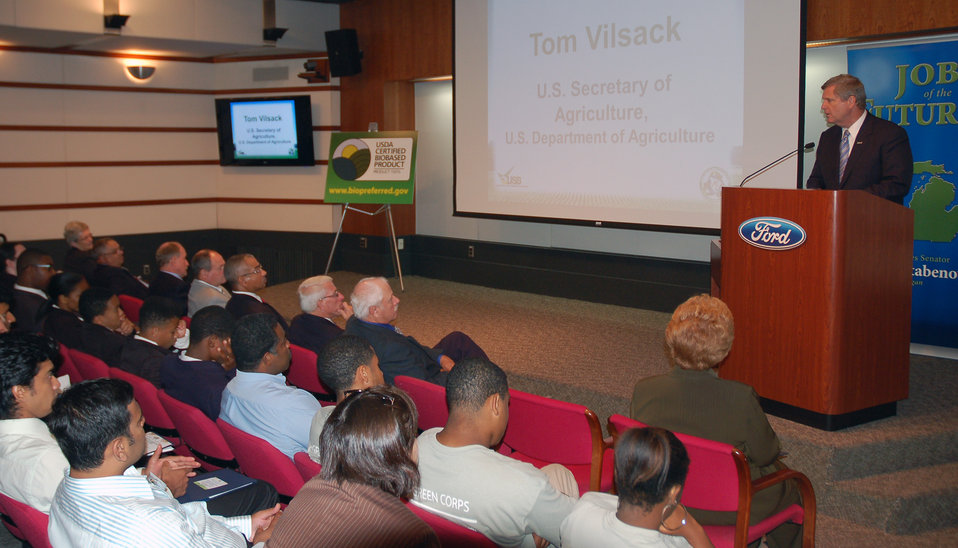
Agriculture Secretary Tom Vilsack speaks at the Ford Plant in Dearborne, MI on Tuesday, August 7, 2012. Secretary Vilsack was in Michigan to discuss statewide economic growth opportunities in the bio-based manufacturing industry in Michigan.